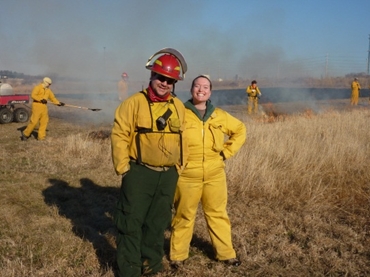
July, 2011 Prescibed burn training at the University of Northen Iowa

Local fireman (left) and EPA ecoAmbassador (right) from the University of Northern Iowa partner up to to organize a prescribed burn training day on campus.